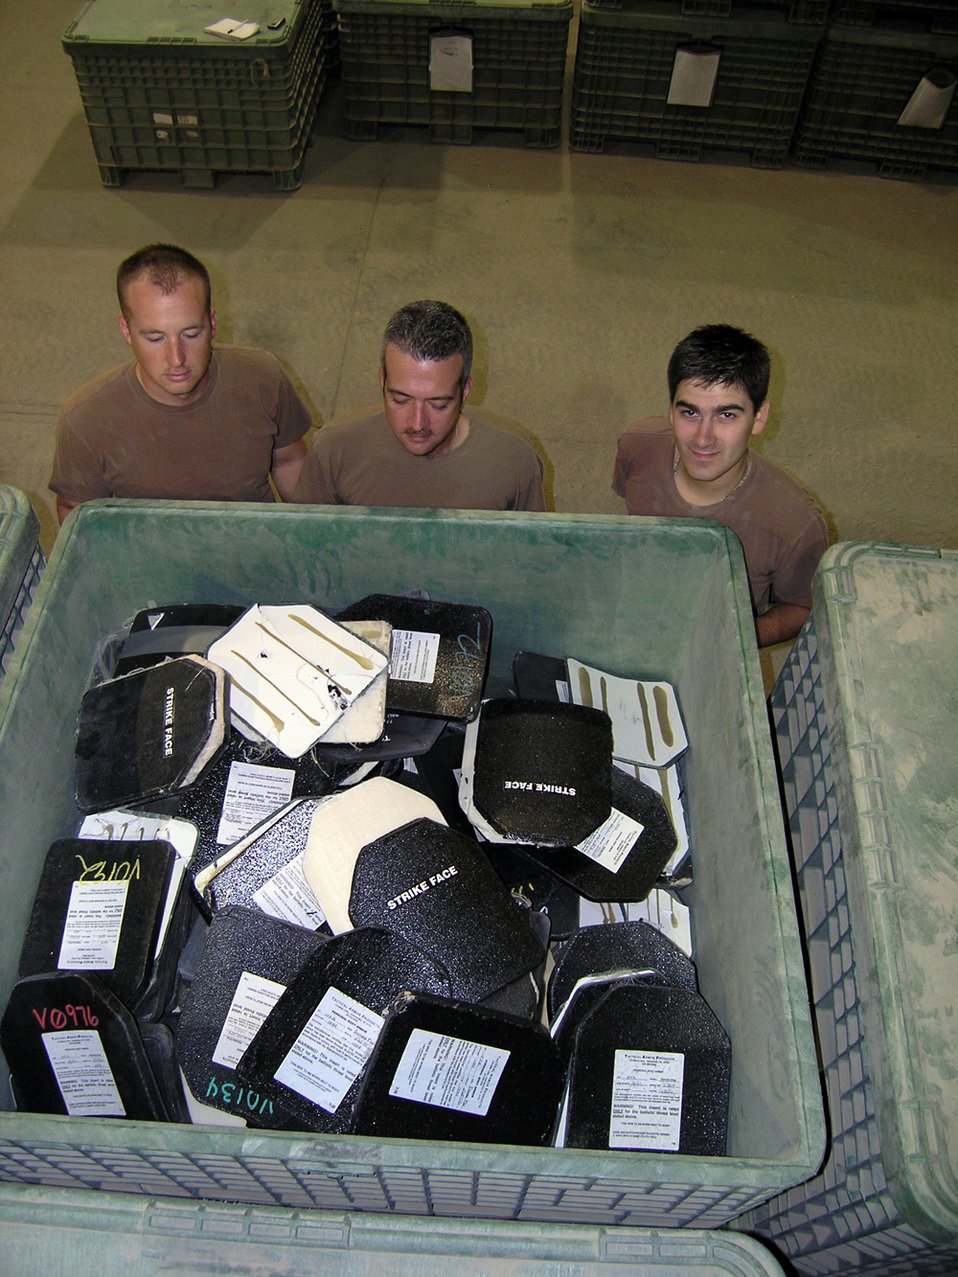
Protecting body armor

ALI BASE, Iraq -- (From left) Senior Airman Josh Warren, Master Sgt. Steve Strange and Senior Airman Caslon Smith stand by a crate holding damaged body armor plates. Much of the armor is unusable because it was mishandled. The Airmen are assigned to the 407th Expeditionary Logistics Readiness Squadron here.